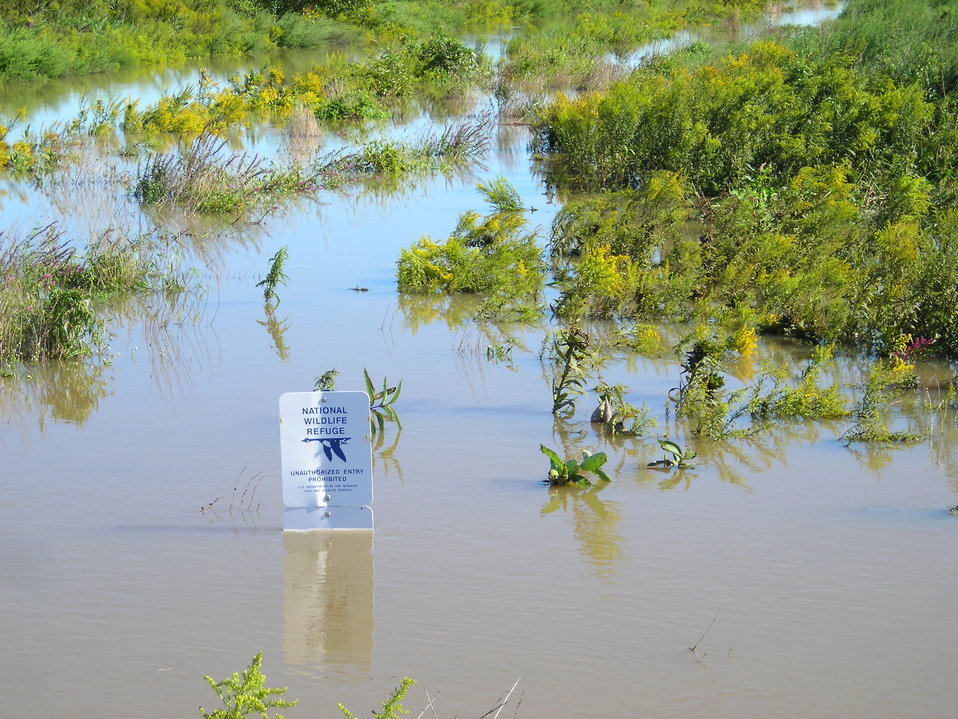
Hurricane Damage at Wallkill River National Wildlife Refuge August 30, 2011

Flooding at Liberty Loop Trail and impoundments, Sussex, NJ.